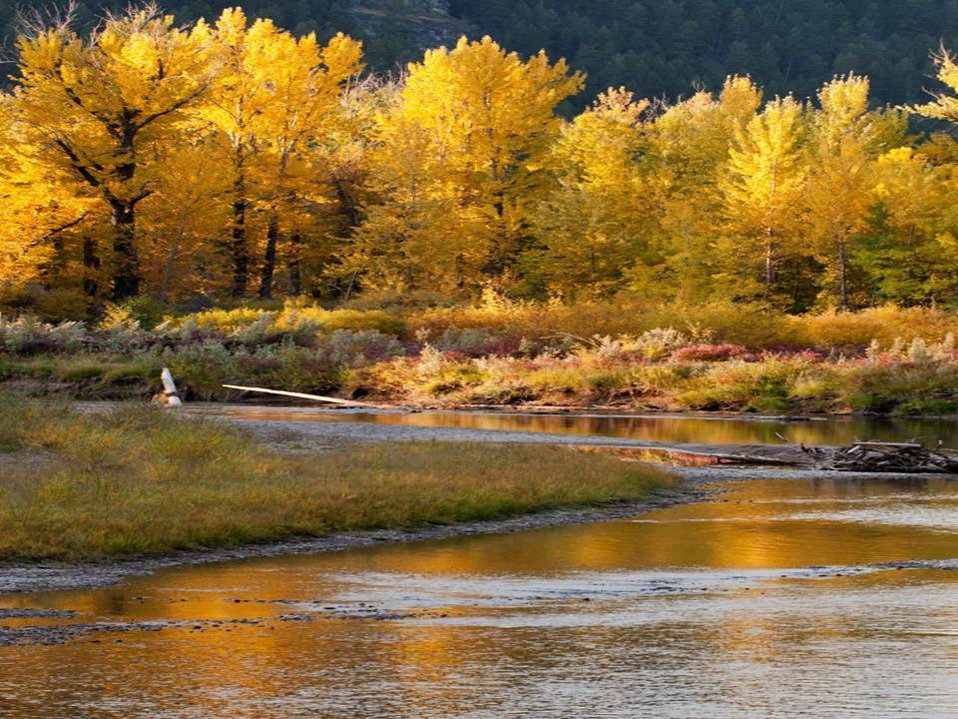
Autumn on the Blackfoot River in Montana